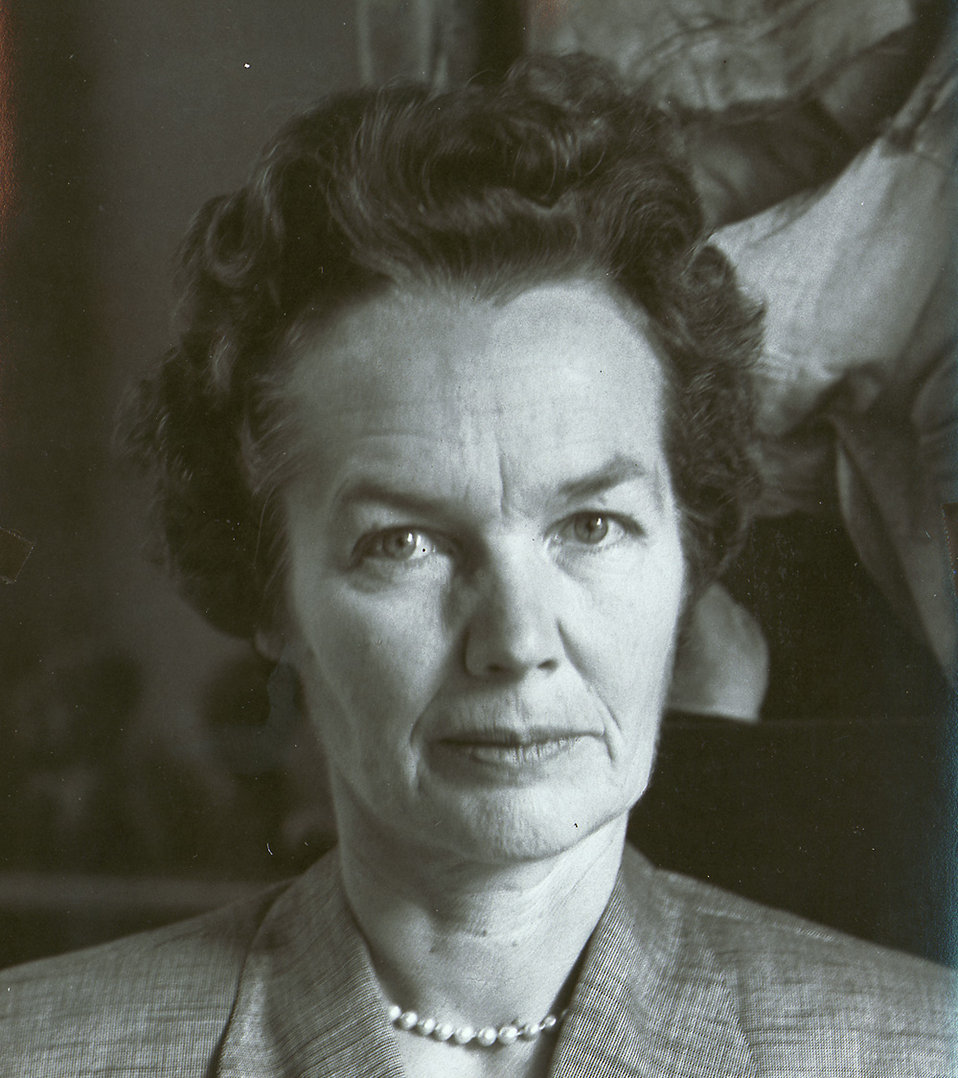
Joy Flinsch Buba (1904-1998) - Women Artists

Sculptor, Bronze statue of Dr. Florence R. Sabin of Colorado for the National Statuary Hall Collection.